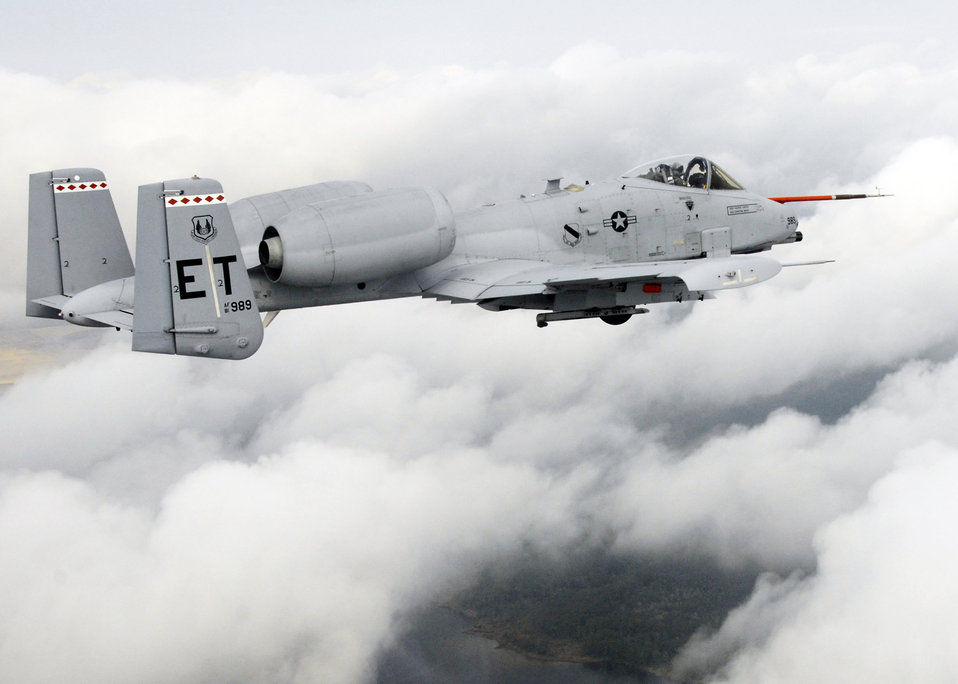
Air Force scientists test, develop bio jet fuels

An A-10C Thunderbolt II from Eglin Air Force Base, Fla., flies along the coast of Florida March 25, 2010, during the first flight of an aircraft powered solely by a biomass-derived jet fuel blend. The A-10 was fueled with a 50/50 blend of Hydrotreated Renewable Jet and JP-8.